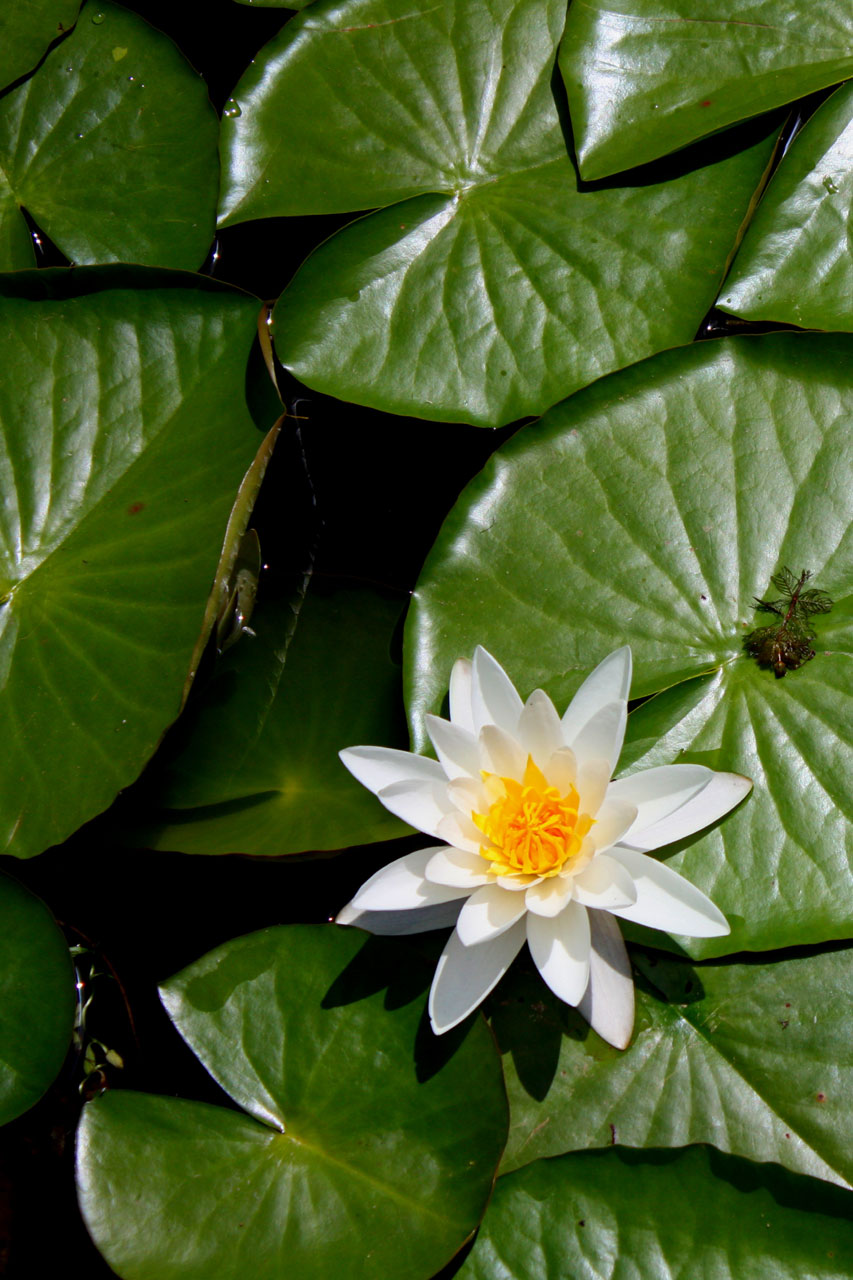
Flowers and leafs.